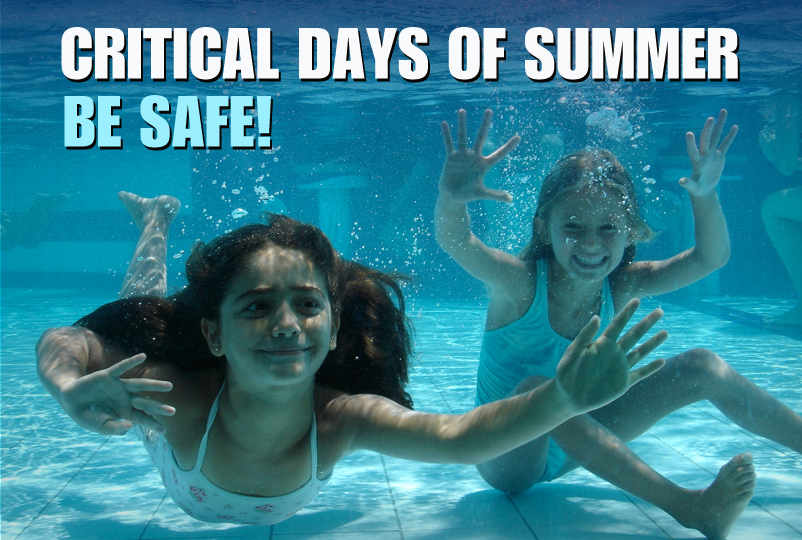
Critical Days of Summer